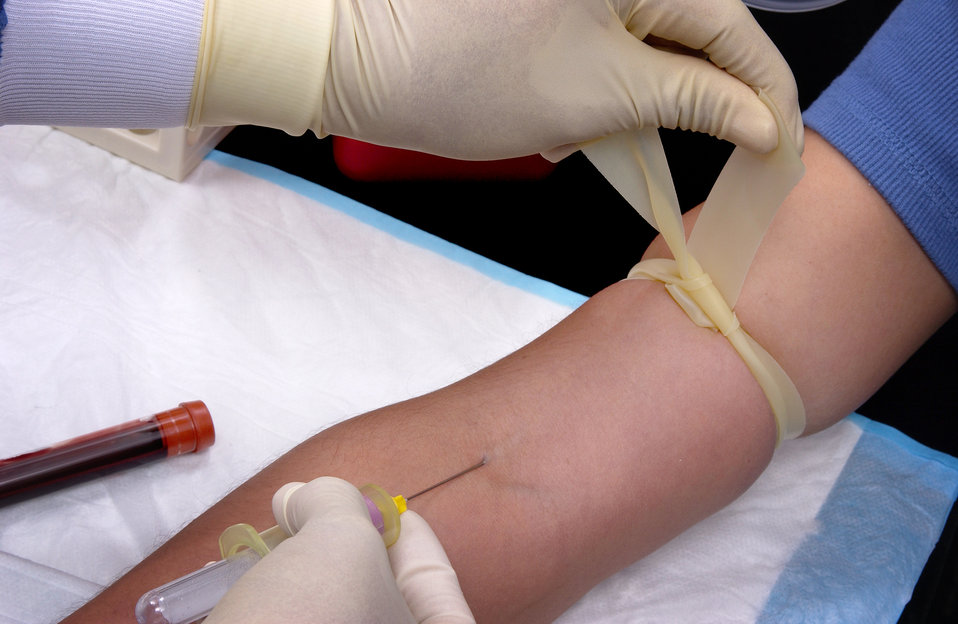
This image depicts a trained phlebotomist, i.e., a technician skilled in the practice of drawing blood from a patient, who was performing a percutaneous antecubital venipuncture into this patient's right antecubital vein. This image is the twelfth in a series of 19 images outlining the steps involved in extracting blood during the venipuncture process.